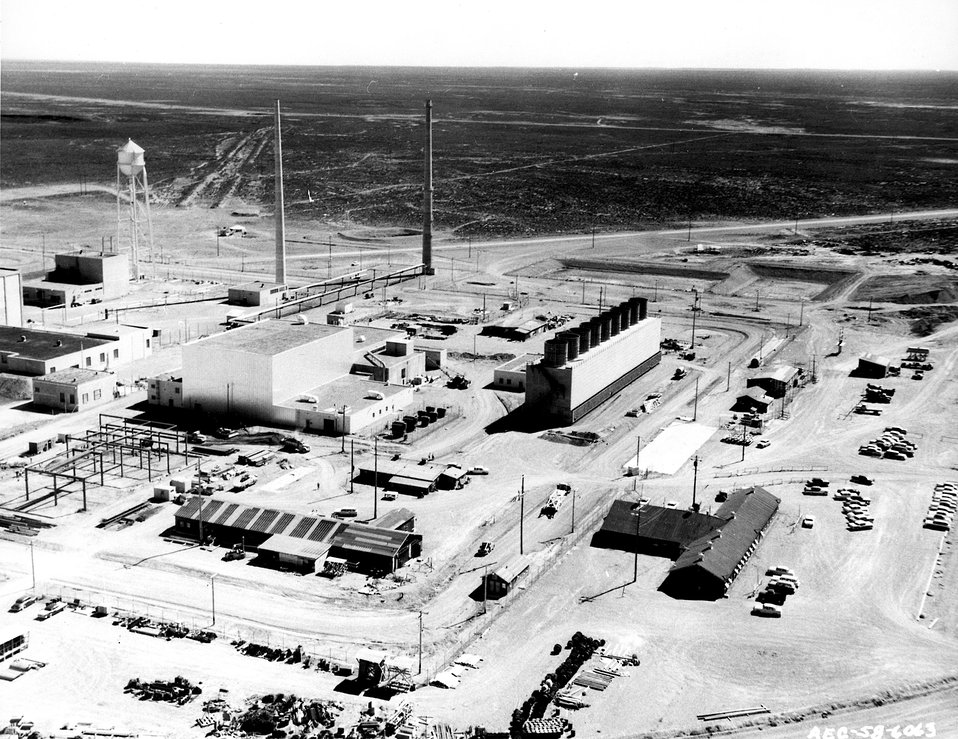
National Reactor Testing Station, Idaho... Aerial view of the Engineering Test Reactor area at the National Reactor Testing Station. Circa 1958.